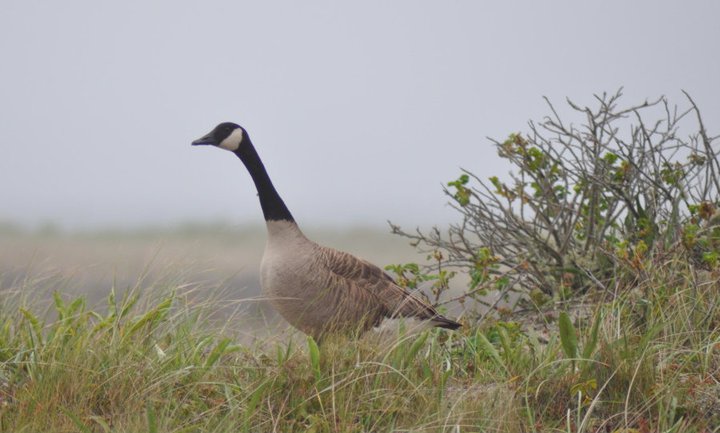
Canada Goose

A Canada goose at the Nantucket National Wildlife Refuge, MA.